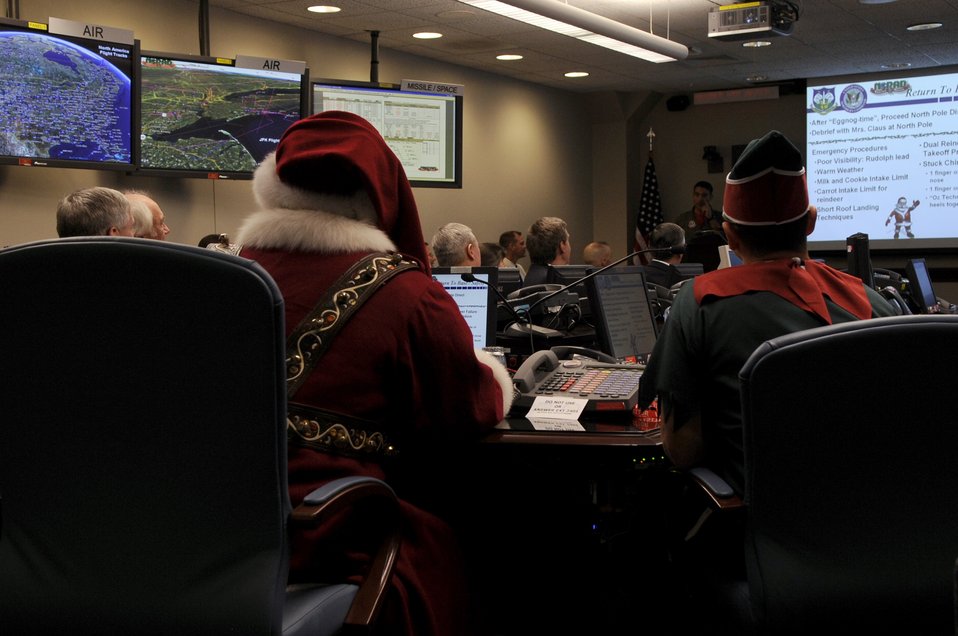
Santa Claus is coming to town

Santa Claus and Elf Dee make a surprise visit to the North American Aerospace Defense Command Tracks Santa Battle Cab Dec. 23 at Peterson Air Force Base, Colo. Santa received Federal Aviation Administration, weather and air mission briefs.